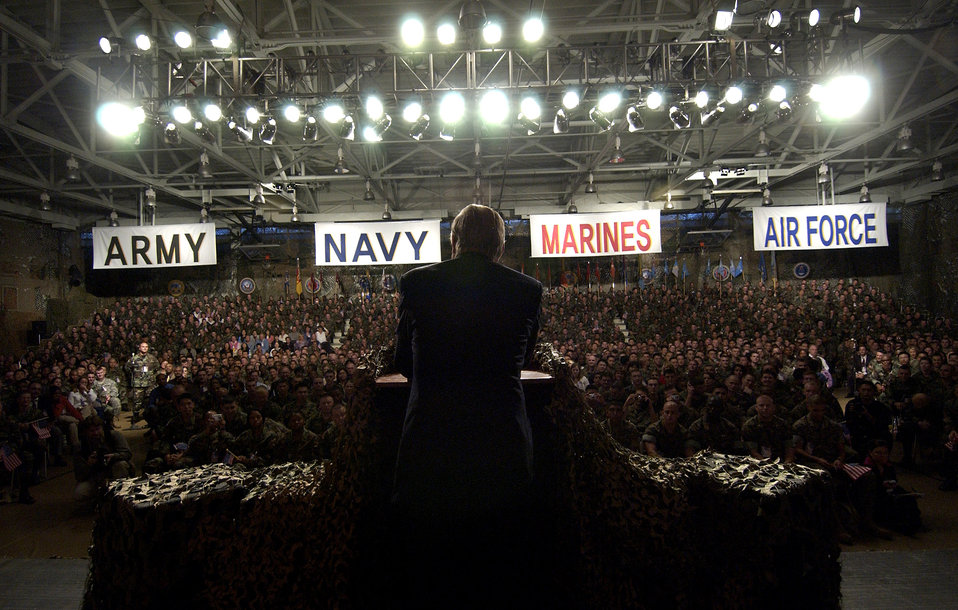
Visit to Korea

YONGSAN ARMY GARRISION, South Korea -- Secretary of Defense Donald H. Rumsfeld gives his closing remarks at town hall meeting at the Collier Field House here. The secretary addressed the town hall Oct. 21. He was in South Korea to meet with South Korean Minister of National Defense Yoon Kwang-ung. Secretary Rumsfeld also conducted the 37th United States and Republic of Korea Security Consultative Meeting to discuss defense policy issues and the future of the two nations' alliance.